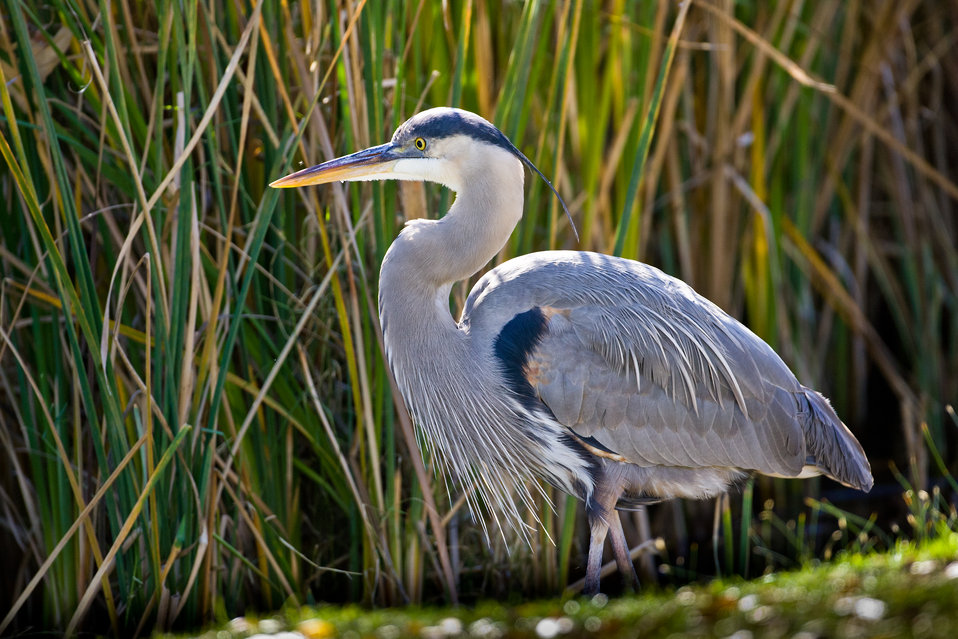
Great blue heron (adult)